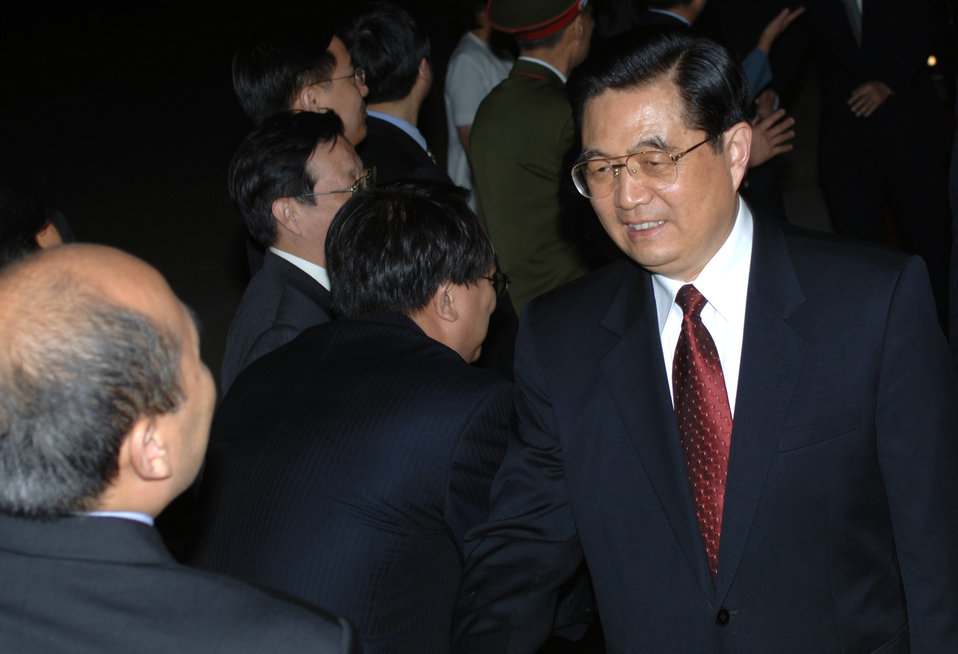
China's president visits U.S.

President Hu Jintao of China is greeted as he arrives at Andrews Air Force Base, Md., Thursday, April 19, 2006.